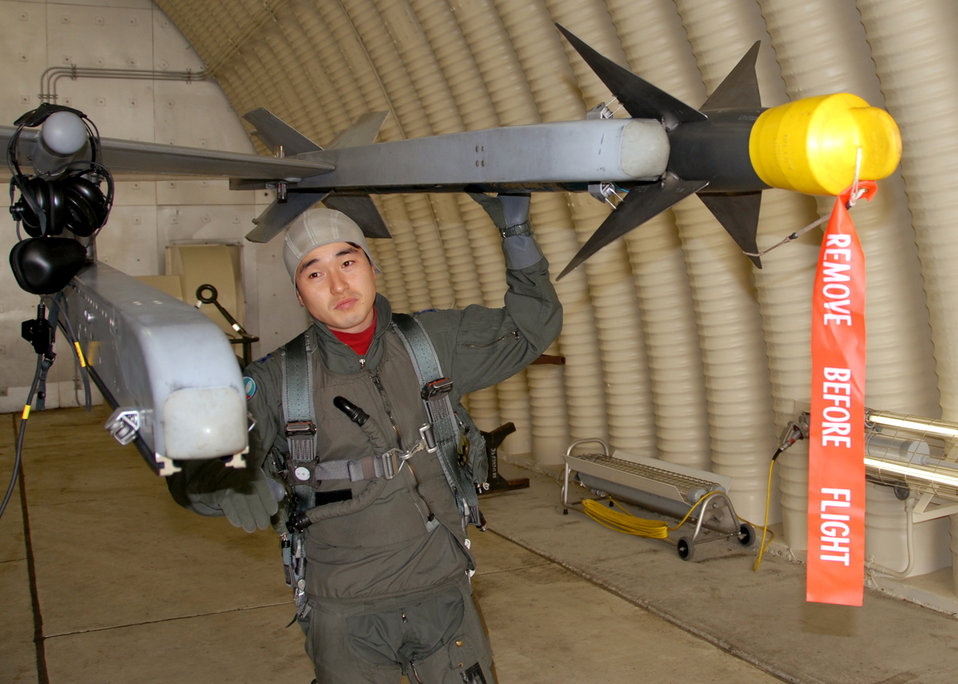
Airmen participate in buddy wing program

Capt. Young-Kwon Ko, a KF-16 Fighting Falcon pilot assigned to the 157th Tactical Fighter Squadron, Seosan Air Base, Republic of Korea air force, preflights his KF-16 aircraft prior to a buddy wing sortie with pilots from the 36th Fighter Squadron during the buddy wing program Dec. 11 to 13. The purpose of the buddy wing program is to exchange ideas, introduce tactics and improve interoperability between the U.S. and Republic of Korea Air Forces.